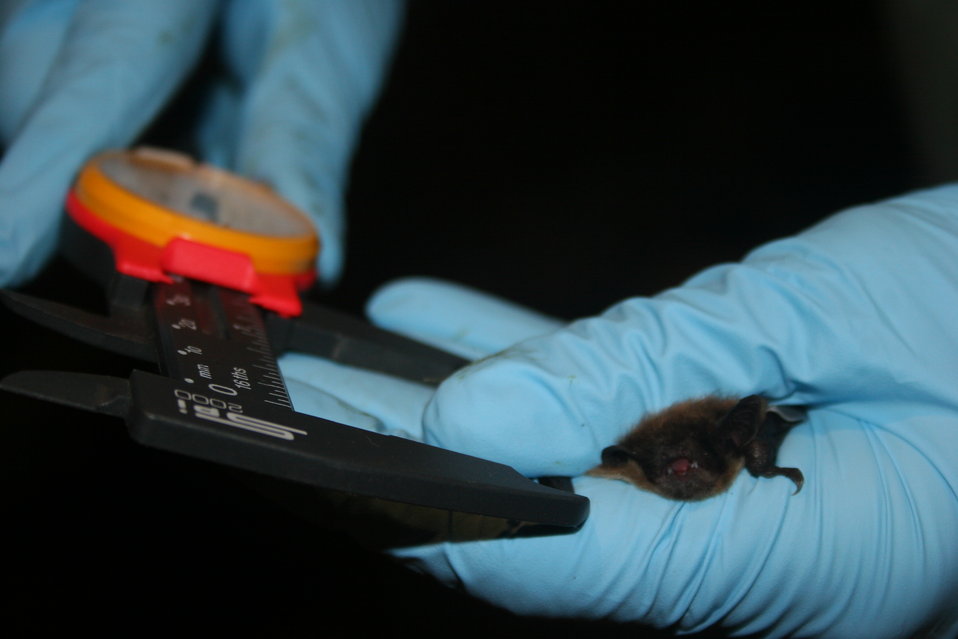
Measuring forearm

Biologist measures forearm of little brown bat.